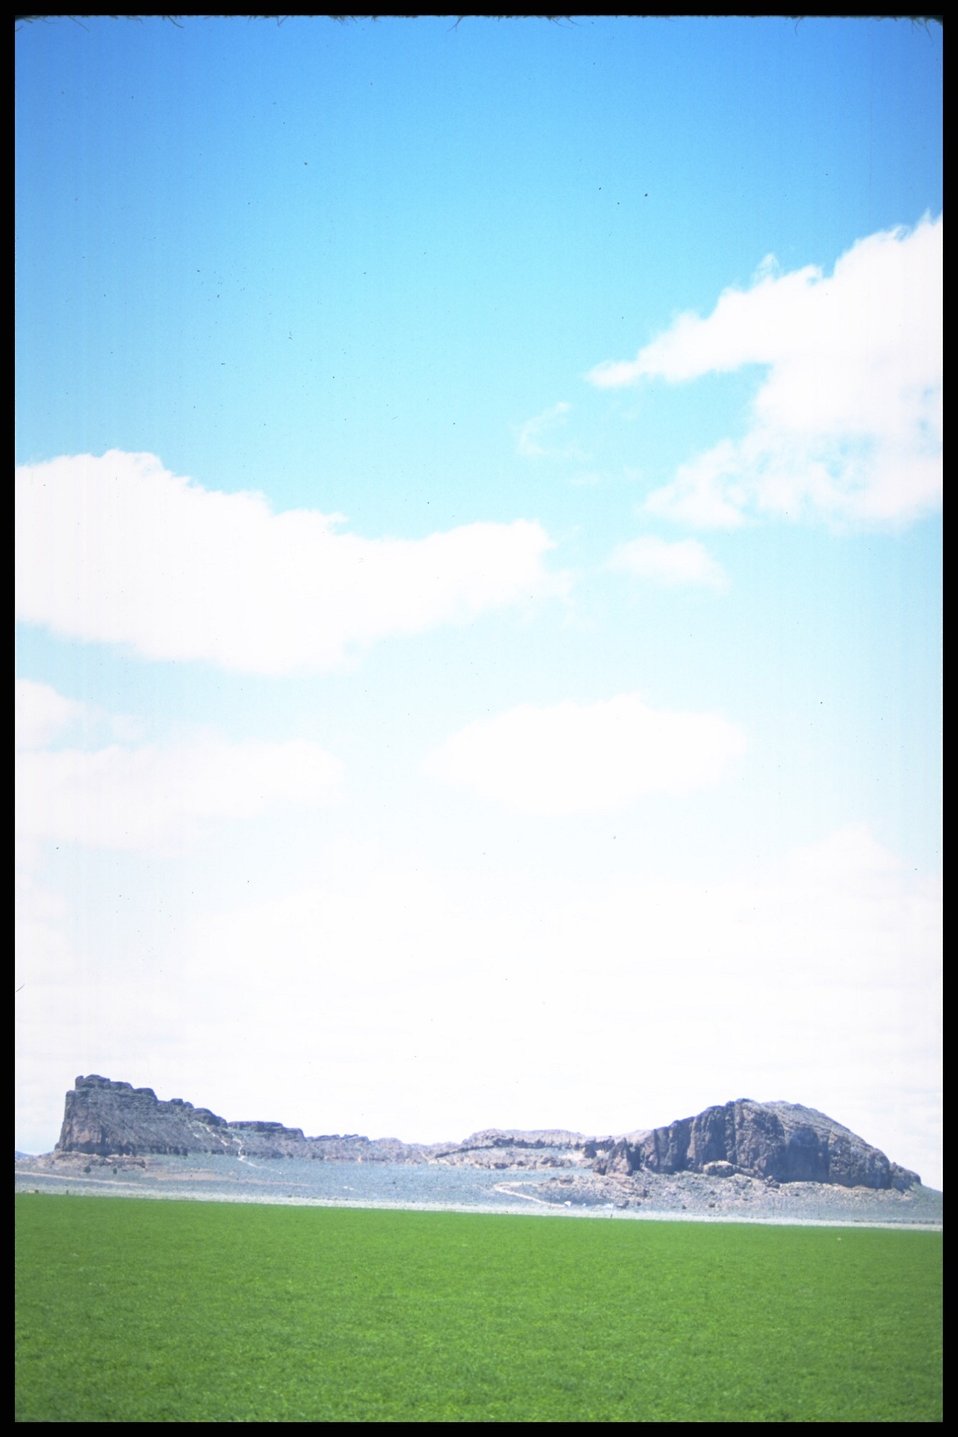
Lakeview District. Scenic view of Ft. Rock.